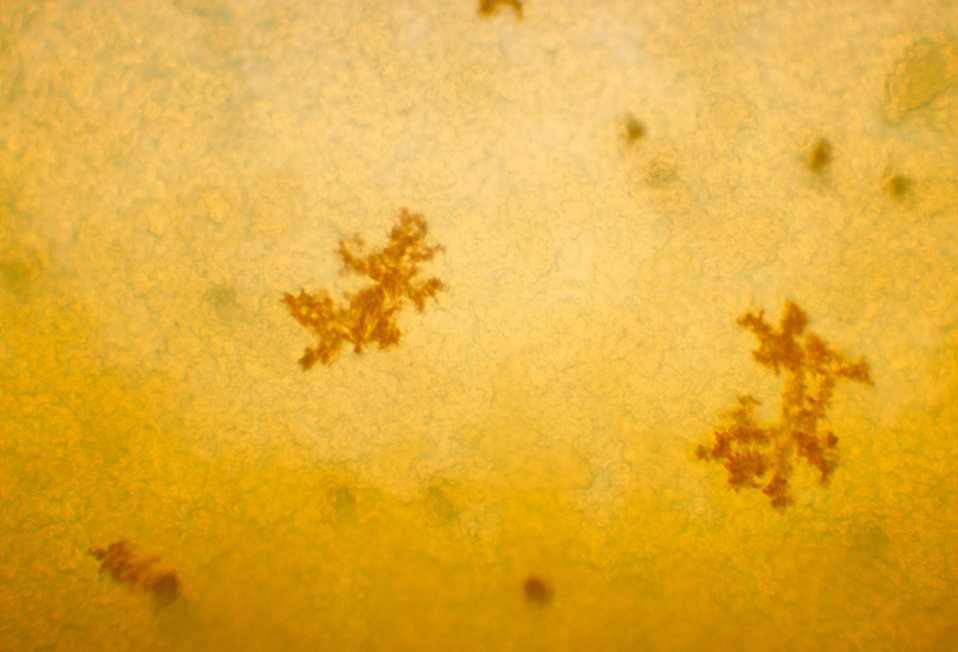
This is a close-up image of a plate culture of Mycobacterium balnei revealing a number of red pigment deposits.